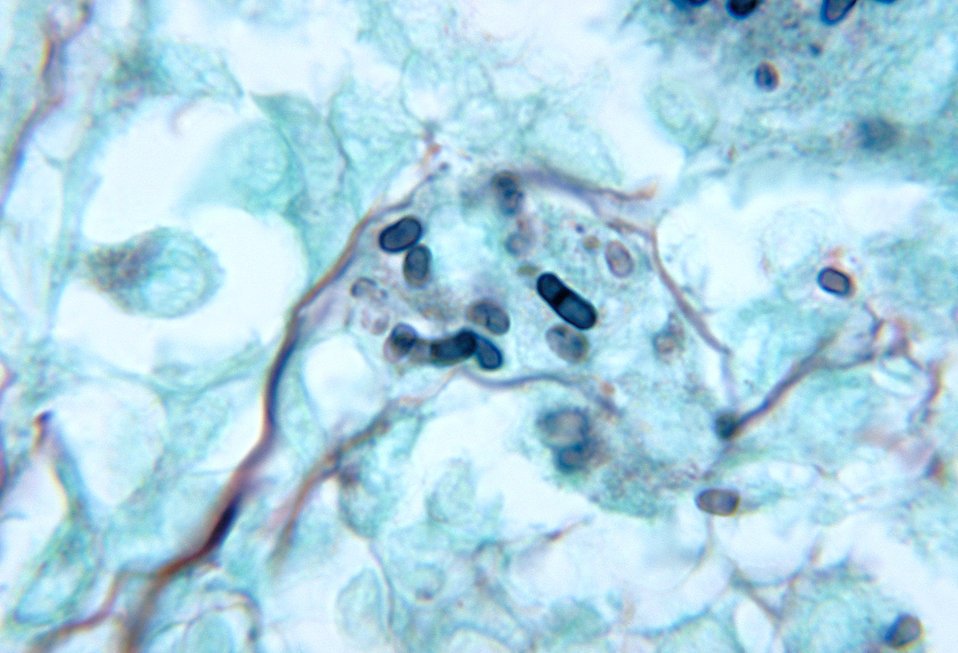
Note the histopathologic changes seen in a mouse testicle indicating penicilliosis due to Penicillium marneffei.